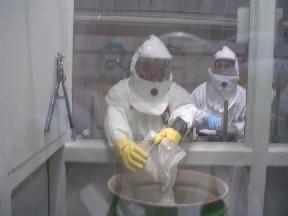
Hanford waste treatment

After extensive training and a successful Operational Readiness Review (ORR), workers at the T Plant treat radioactive sludge retrieved from the North Loadout Pit of the K Basins at the Hanford Site near Richland, WA.